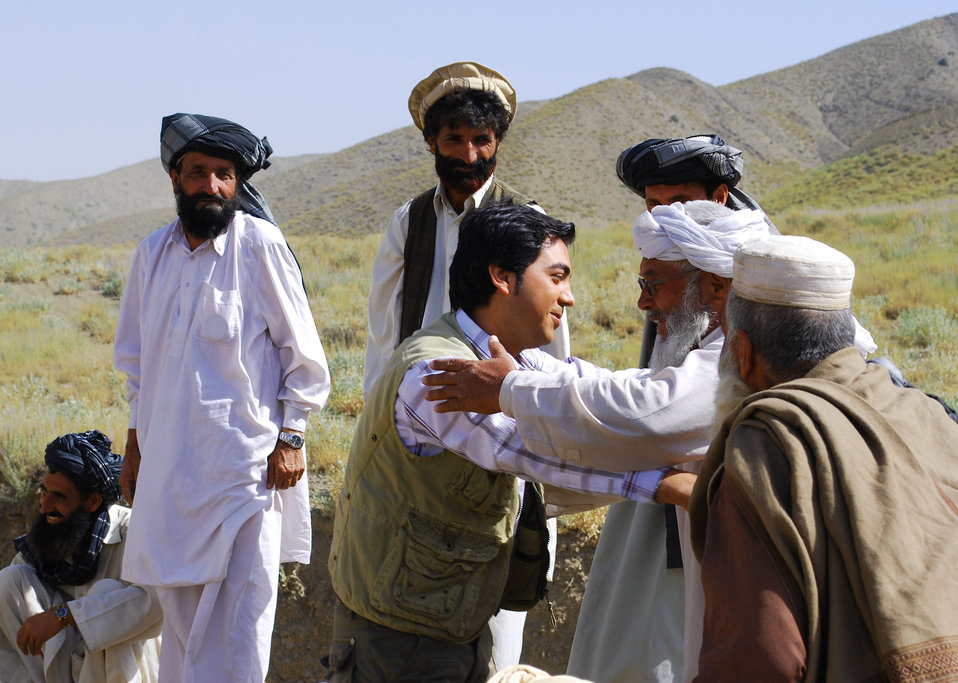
'On the Road' in Paktya Province